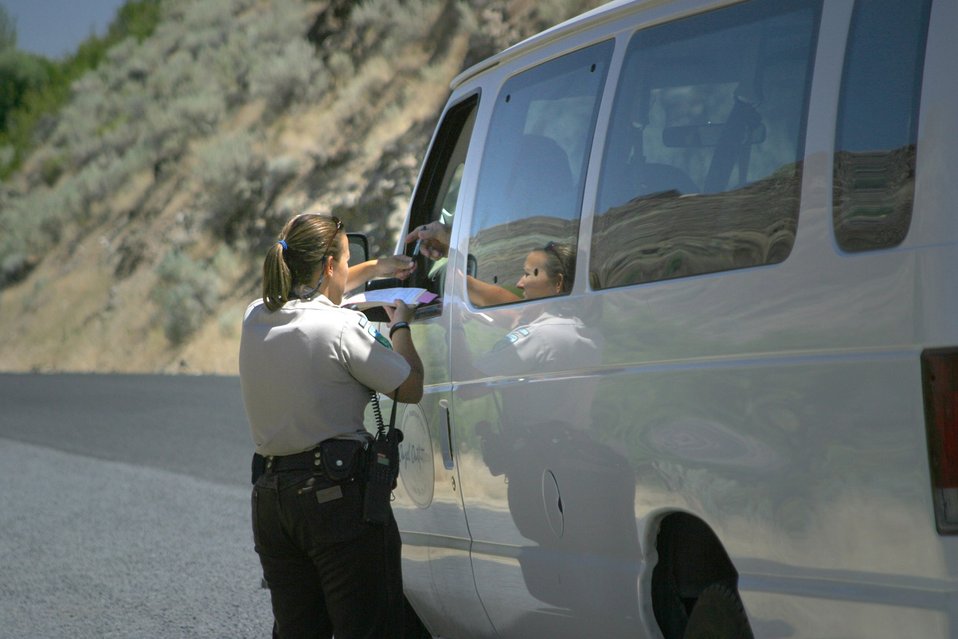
BLM Law Enforcement Rangers patrol the Lower Deschutes river and issue citations when necessary.